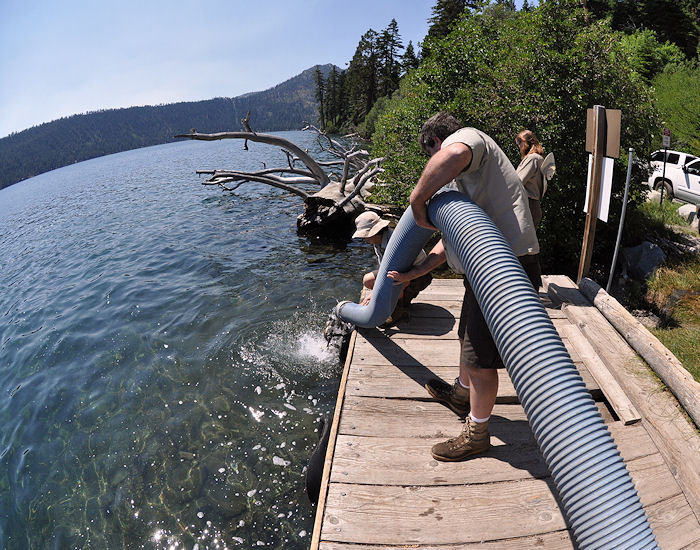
Lahontan cuttroat trout stocking operation

Stocking more than 8,000 Lahontan cutthroat trout in Fallen Leaf Lake, Tahoe Basin, Calif., September 10, 2010.